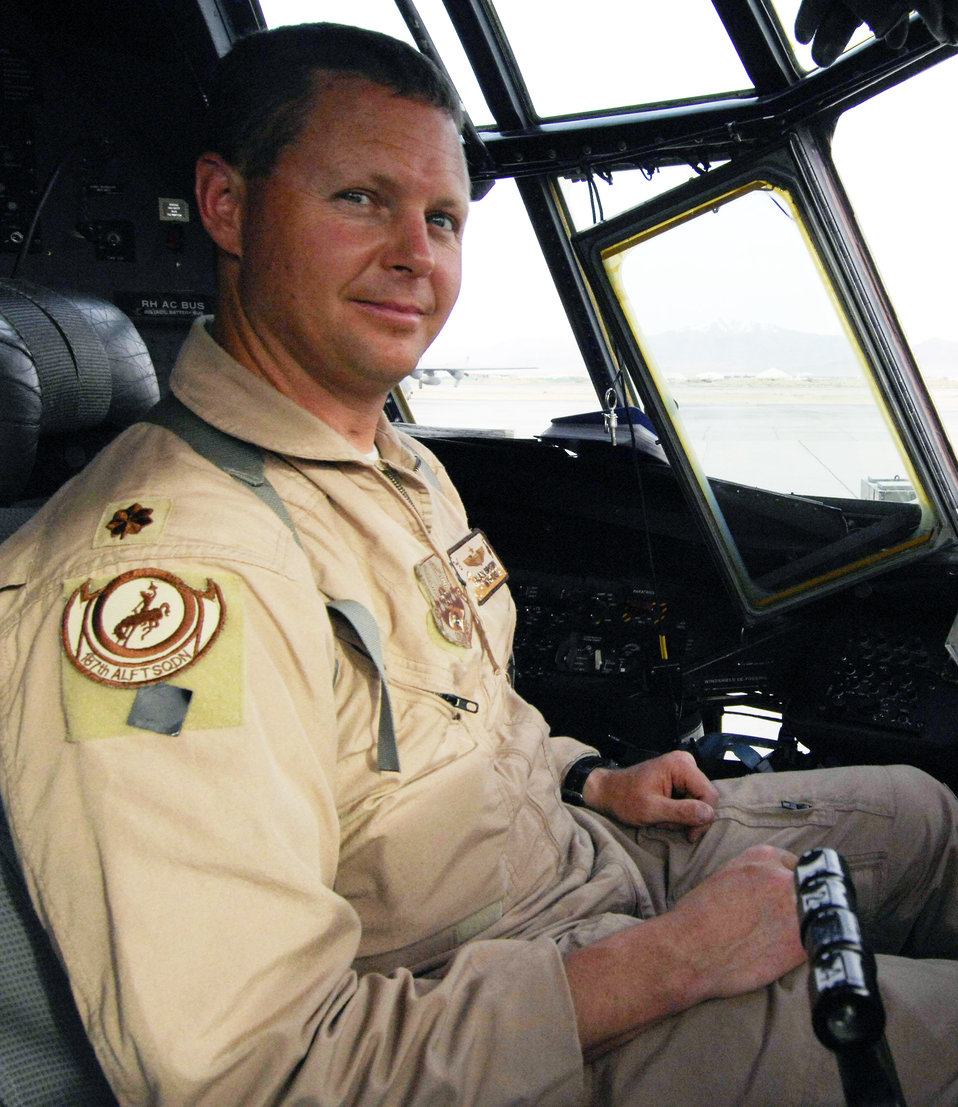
Amputee pilot completes third deployment

Major Alan Brown sits in a C-130 Hercules before a mission March 21 at Bagram Airfield, Afghanistan. Major Brown is an amputee C-130 pilot deployed with the 774th Expeditionary Airlift Squadron from the 187th Airlift Squadron of the Wyoming Air National Guard. He lost his leg in a hunting accident 10 years ago, and after seven years he regained his qualifcations to fly.